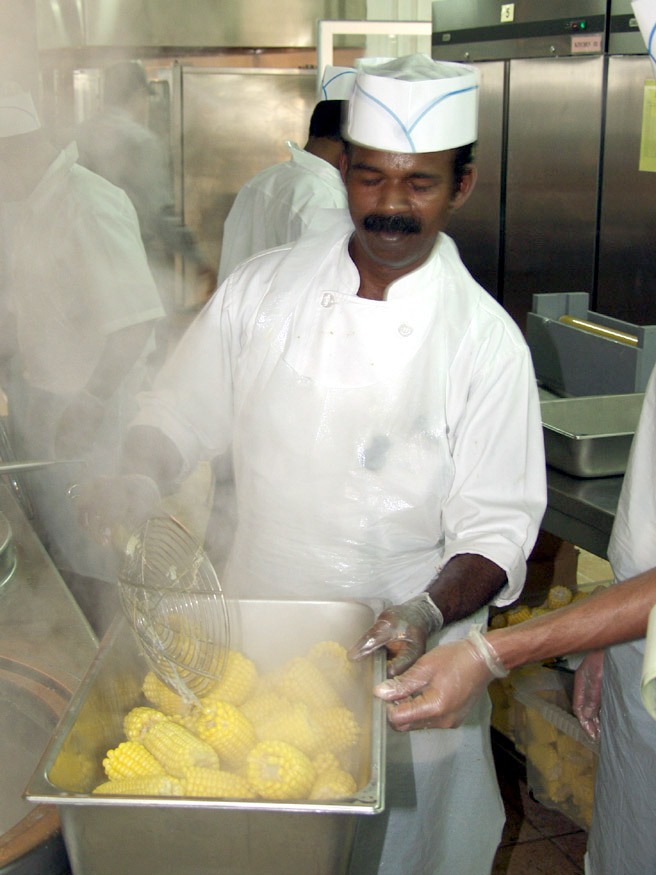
Ready to eat

KIRKUK AIR BASE, Iraq -- George Johnson, a head cook, places corn on the cob into a serving basin during a meal at the new dining facility here. The new facility can handle 1,500 people at a time and is able to serve up to 18,000 meals a day.